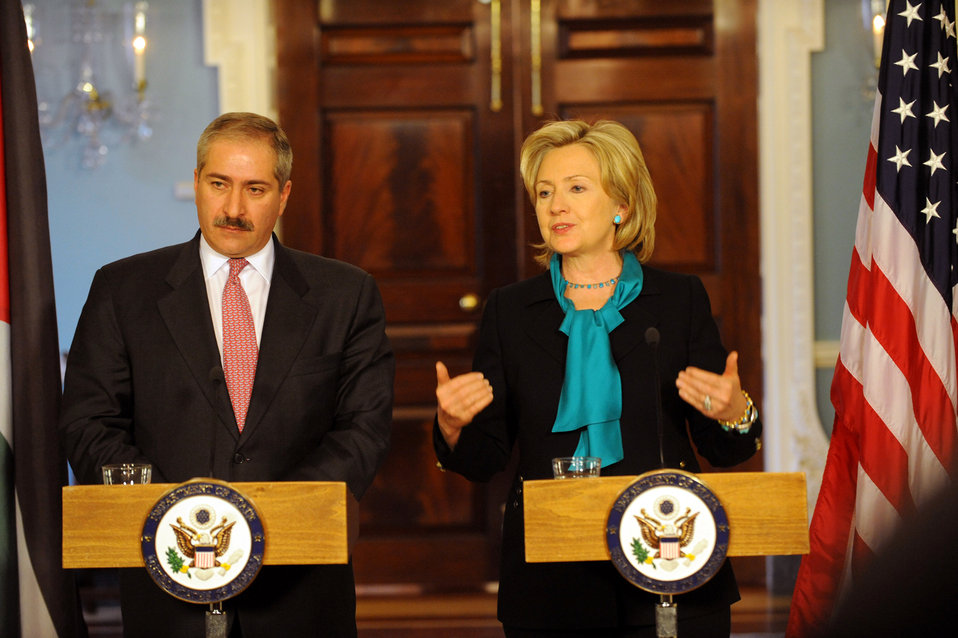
Secretary Clinton Meets With Jordanian Foreign Minister

U.S. Secretary of State Hillary Rodham Clinton holds a bilateral meeting with His Excellency Nasser Judeh, Foreign Minister of Jordan, at the Department of State in Washington, DC January 8, 2010.